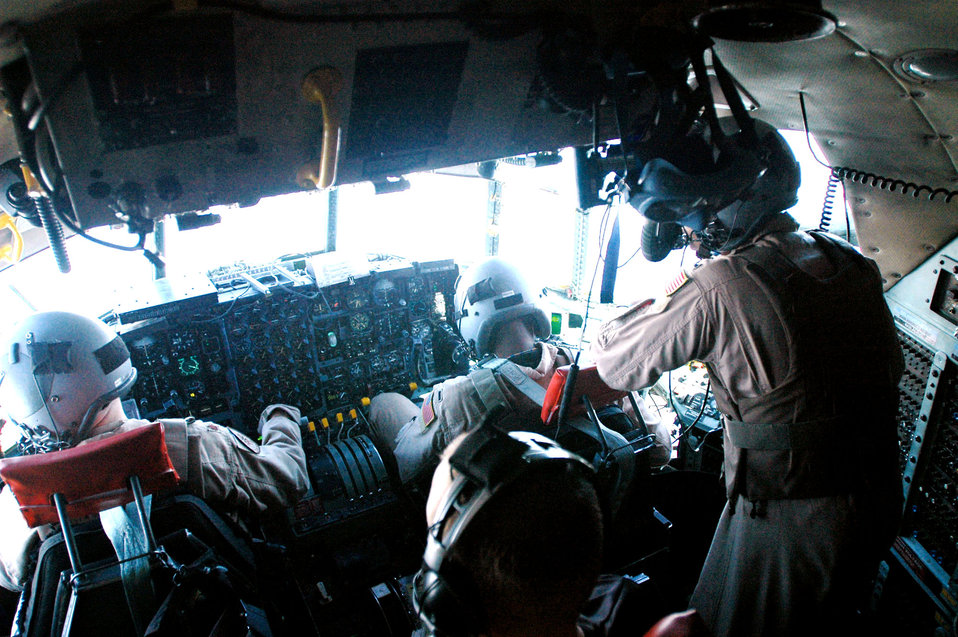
4th Corps Soldiers get lift from 386th AEW

Crewmembers monitor flight operations from the front deck of a C-130 Hercules while transporting Soldiers to Balad Air Base, Iraq. The Hercules crew is assigned to the 386th Air Expeditionary Wing.